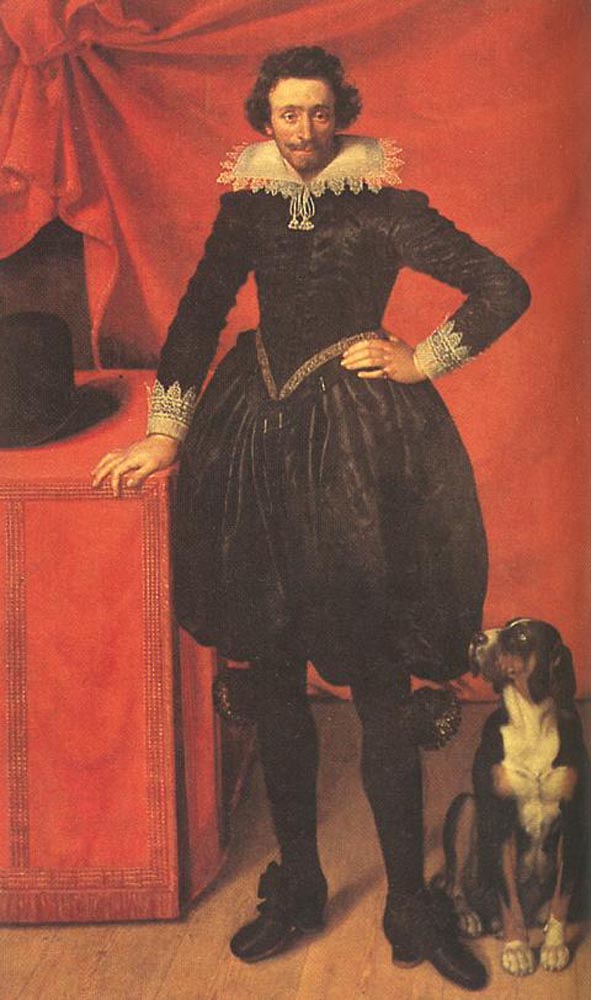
Lorrain